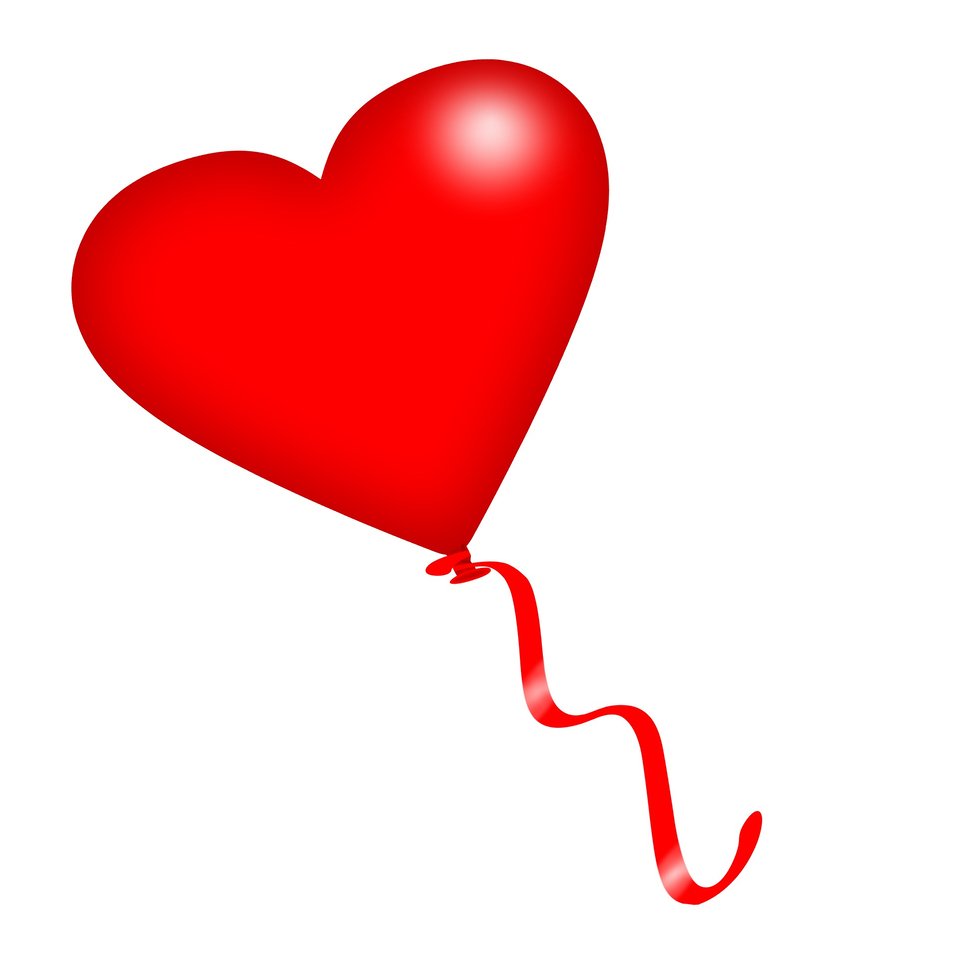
Heart balloon with ribbon

Red heart on a ribbon.